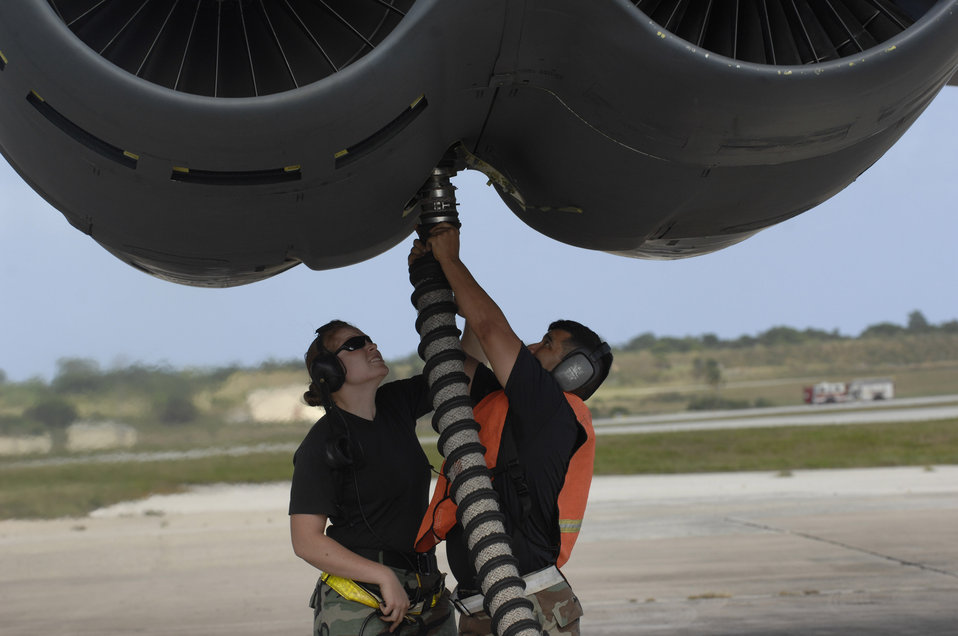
Airman 1st Class Caroline Kraus and Tech. Sgt. Carlos Sanchez remove the air cart hose after starting engines Dec. 30, during a B-52 Stratofortress launch at Andersen Air Force Base, Guam. Both are assigned to the 36th Expeditionary Aircraft Maintenance Squadron at Andersen and are deployed from Minot AFB, N.D. The bomber's participation in constant training helps emphasize the U.S. bomber presence, demonstrating U.S. commitment to the Pacific region.